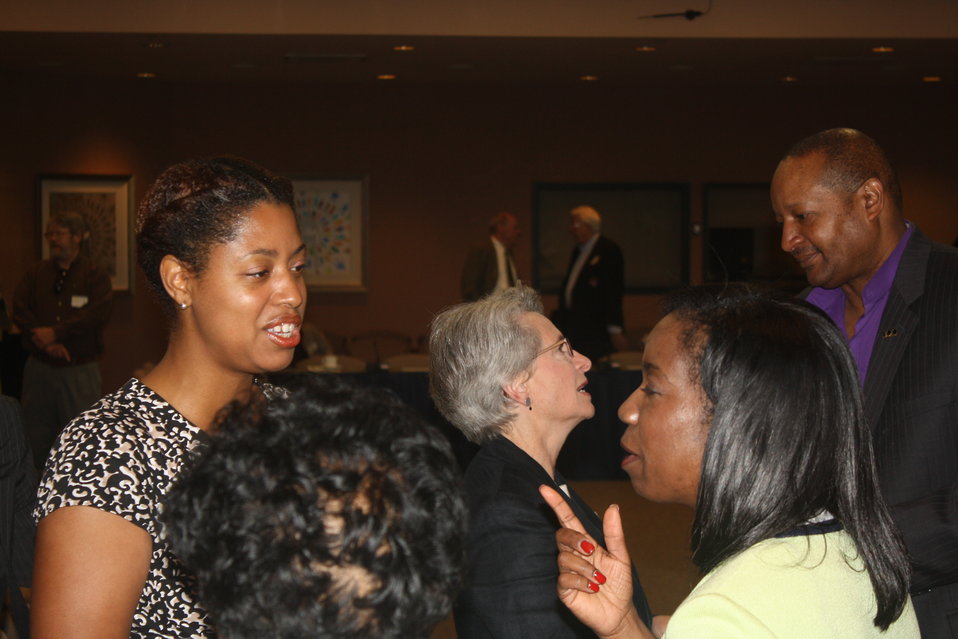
Faith-Based and Neighborhood Partnership launch at Atlanta's Carter Center